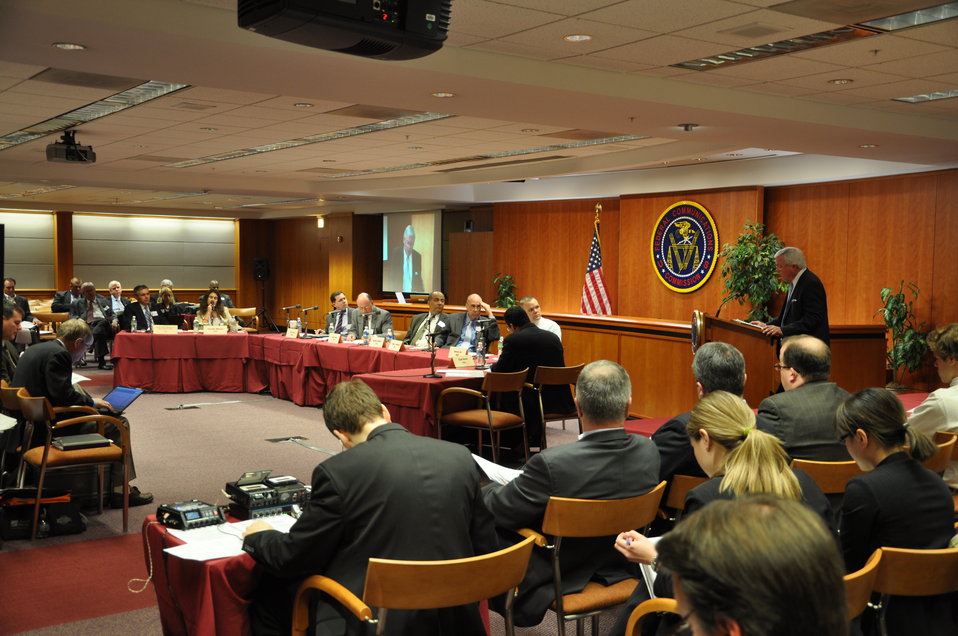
FCC ERIC Public Safety Workshop

ERIC: Public Safety Workshop; Commission Meeting Room; March 02, 2010